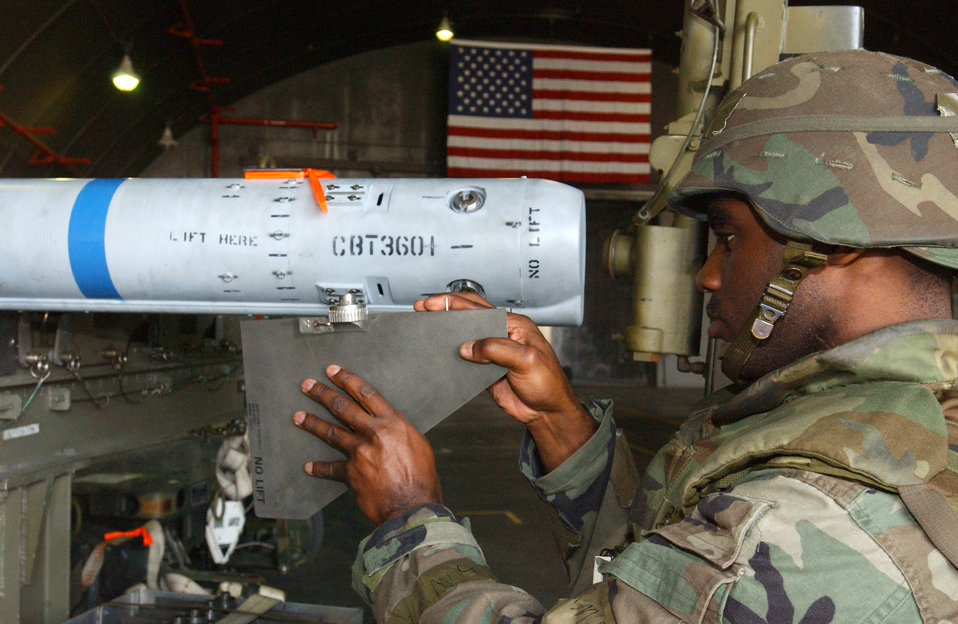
Conventional readiness

KADENA AIR BASE, Japan -- Staff Sgt. William Warrior inspects a missile fin for damage following a simulated conventional attack during an operational readiness exercise here April 21. Sergeant Warrior is a munitions crew chief with the 18th Wing here.